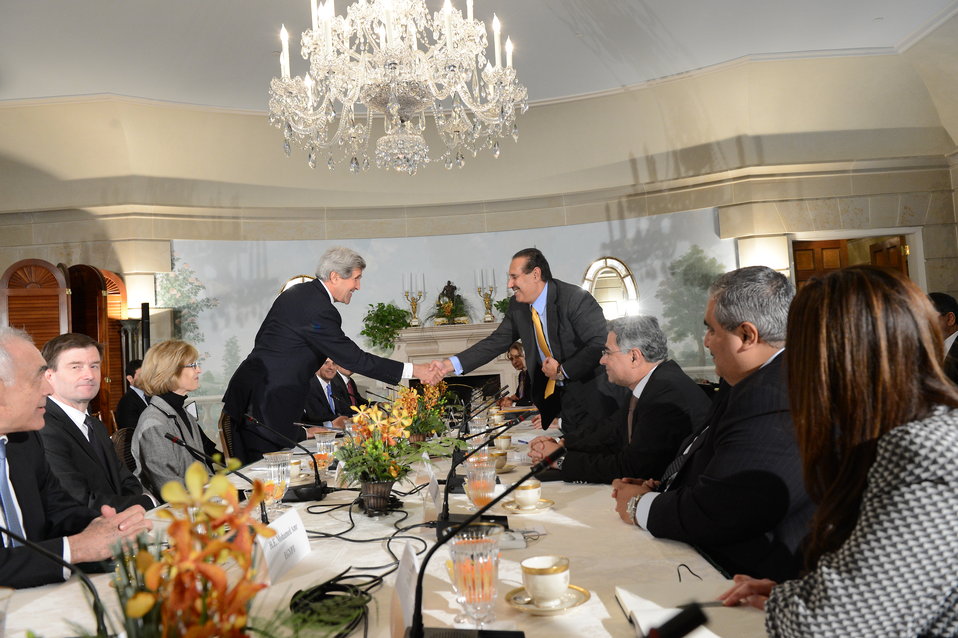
Secretary Kerry Shakes Hands With Qatari Prime Minister and Foreign Minister Sheikh Hamad bin Jassim bin Jabr Al-Thani

U.S. Secretary of State John Kerry shakes hands with Qatari Prime Minister and Foreign Minister Sheikh Hamad bin Jassim bin Jabr Al-Thani during a meeting with the Arab League delegation at the Blair House in Washington, D.C., on April 29, 2013.